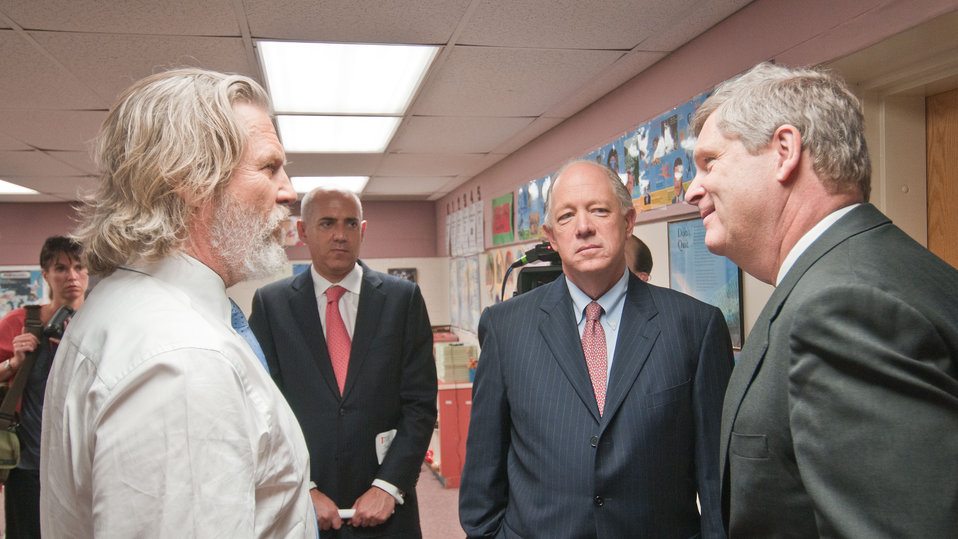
U.S. Department of Agriculture Secretary Tom Vilsack (right) and No Kid Hungry National Campaign Spokesperson Jeff Bridges (white shirt), and Share Our Strength founder and Executive Director Billy Shore (right) talk about what will it take to end hunger at the Virginia No Kid Hungry Campaign launch at Barcroft Elementary School in Arlington, VA, on Tuesday, June 7, 2011. Secretary Vilsack said, during his address “ We know our strength comes from out partnerships…” Campaign partners include Share our Strength, the Federation of Virginia Food Banks, corporate partners, education leaders, government agencies and community organizations. The Virginia Summer Meals for Kids Program is funded by the USDA and provides free summer meals at hundreds of sites across the Commonwealth of Virginia, but according to a new report released today by the Food Research and Action Center, more than 80 percent of those eligible do not participate. Virginia Governor Bob McDonnell stressed at the event that all parents who want free meals for their kids in need, can simply call 211 to find a summer meals site near them. Parents across the nation can locate USDA’s Summer Food Service Program (SFSP) feeding sites and other nutrition assistance programs in their communities by calling the National Hunger Hotline at 1-866-3-Hungry or 1-877-8-HAMBRE.